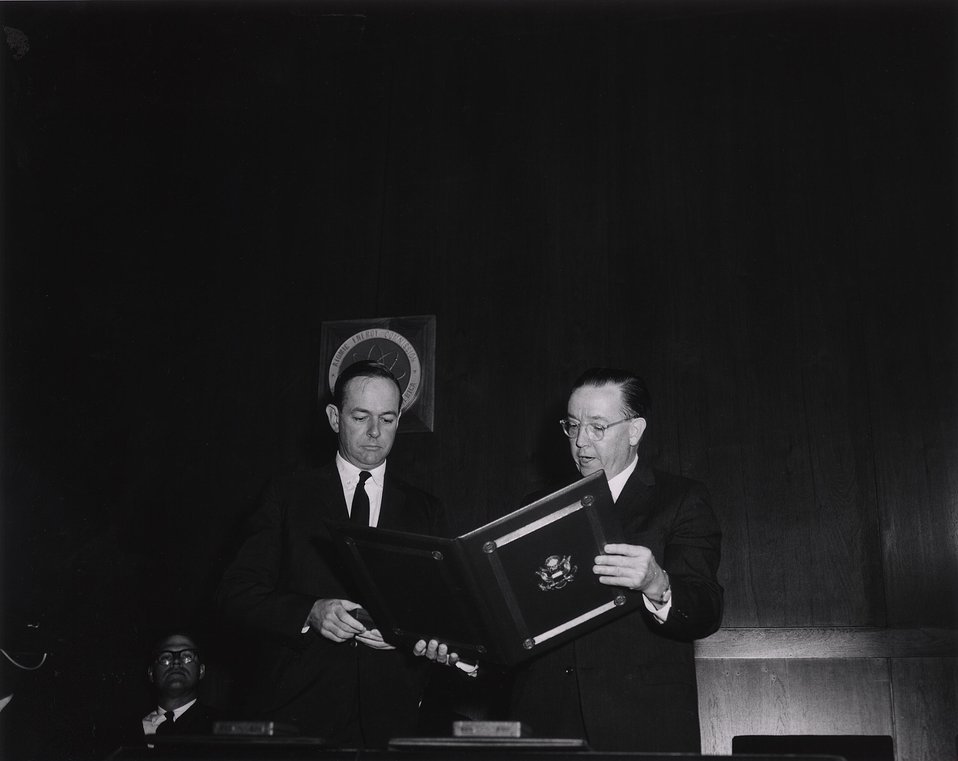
E.O. Lawrence Awards, 1967. Carnegie Institution Auditorium. April 27, 1967. L- Dr. Allan F. Henry. R- Commissioner Ramey.